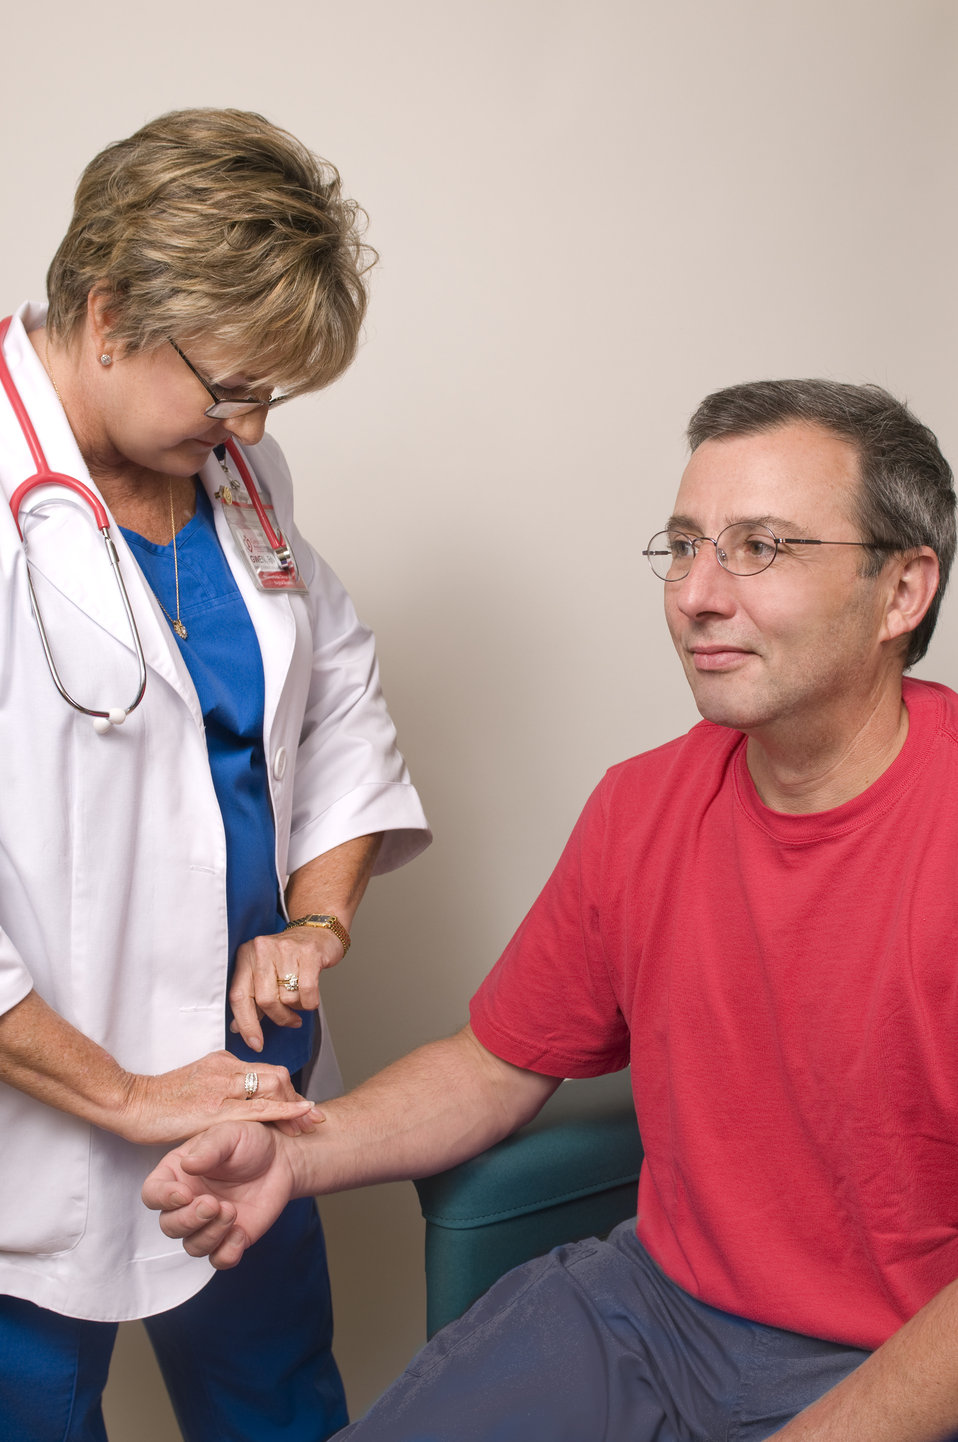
During his physical examination, this seated male patient was having his pulse rate determined by a female clinician, who held his right wrist at the region of the radial artery.